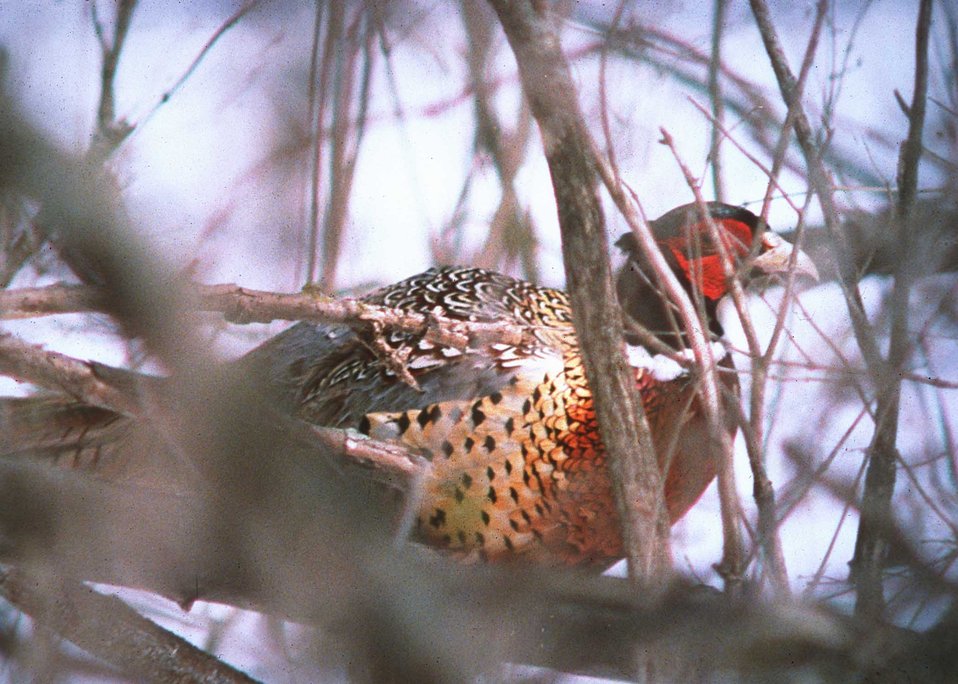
Pheasant in a sloped wetland in South Dakota.